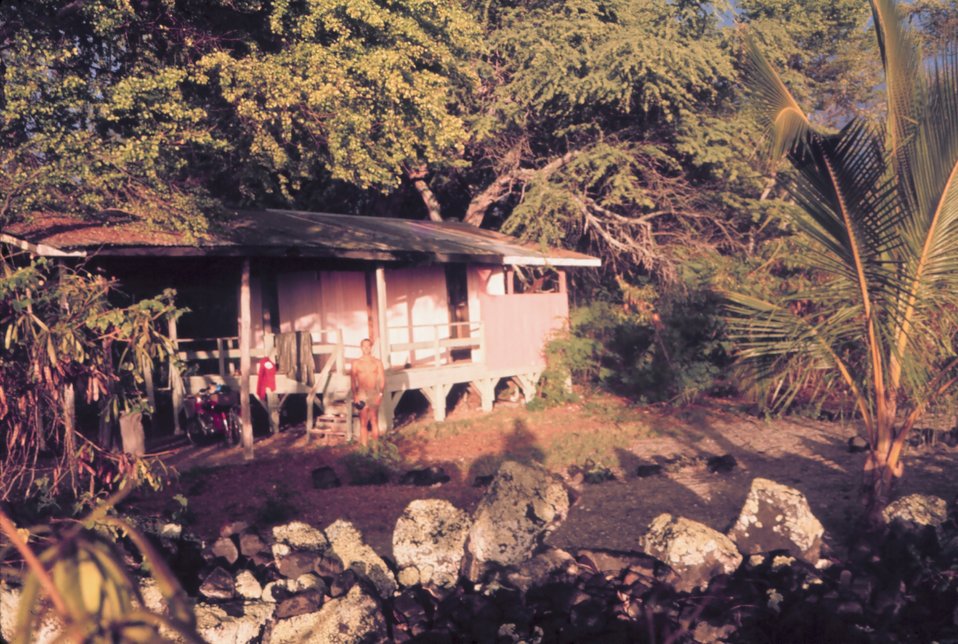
Home sweet home for Dr. McVey in 1966. Living in paradise.